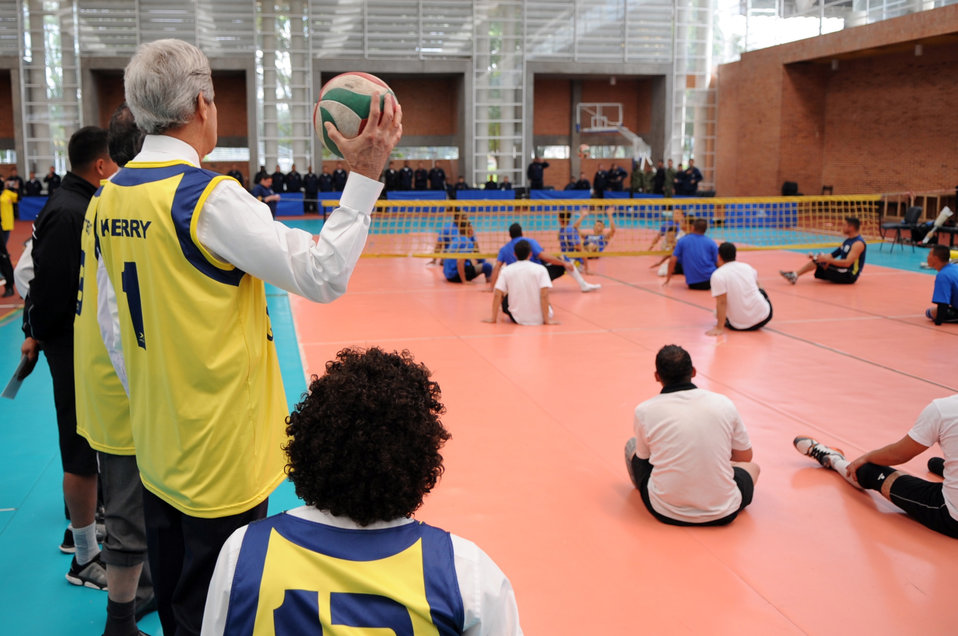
Secretary Kerry Watches Wounded Veterans Play Seated Volleyball

U.S. Secretary of State John Kerry watches a seated volleyball game with wounded veterans during a visit to the Coldeportes Center in Bogota, Colombia, on August 12, 2013.